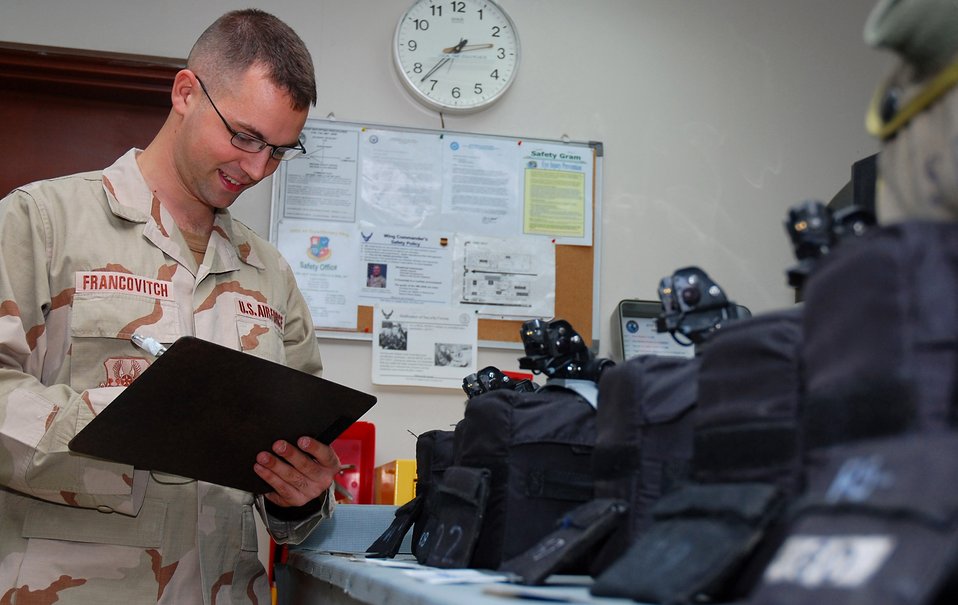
Life support

Senior Airman Joshua Francovitch arranges night-vision goggles prior to aircrew members stepping for an upcoming mission Nov. 2 in Southwest Asia. Airman Francovitch, a 386th Expeditionary Operations Group aircrew life support technician, is deployed from Yokota Air Base, Japan.